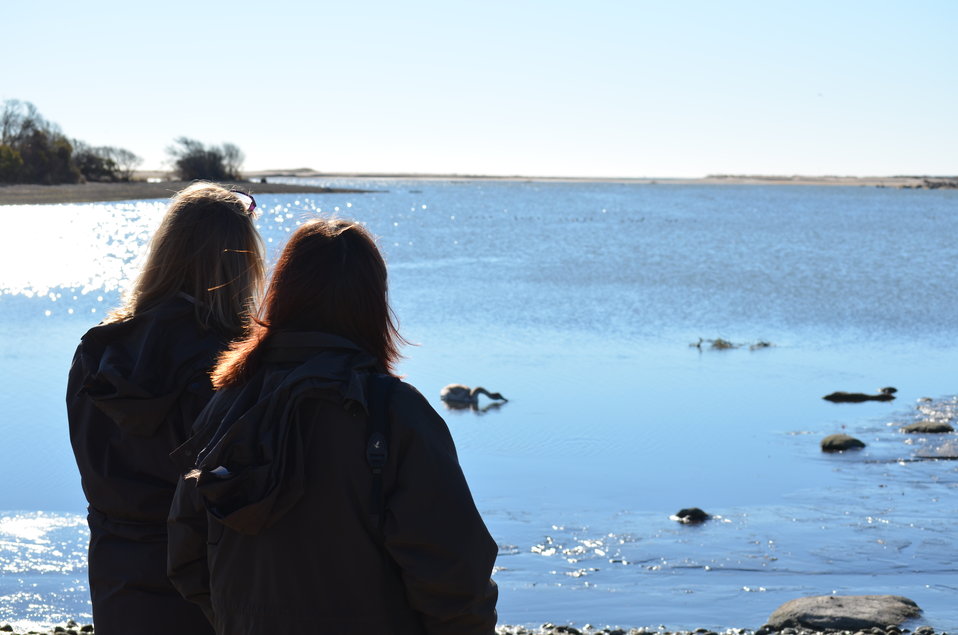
Viewing breach in distance (RI)

Rhode Island National Wildlife Refuge complex staff view the breach at Trust Pond National Wildlife Refuge caused by Hurricane Sandy's storm surge.